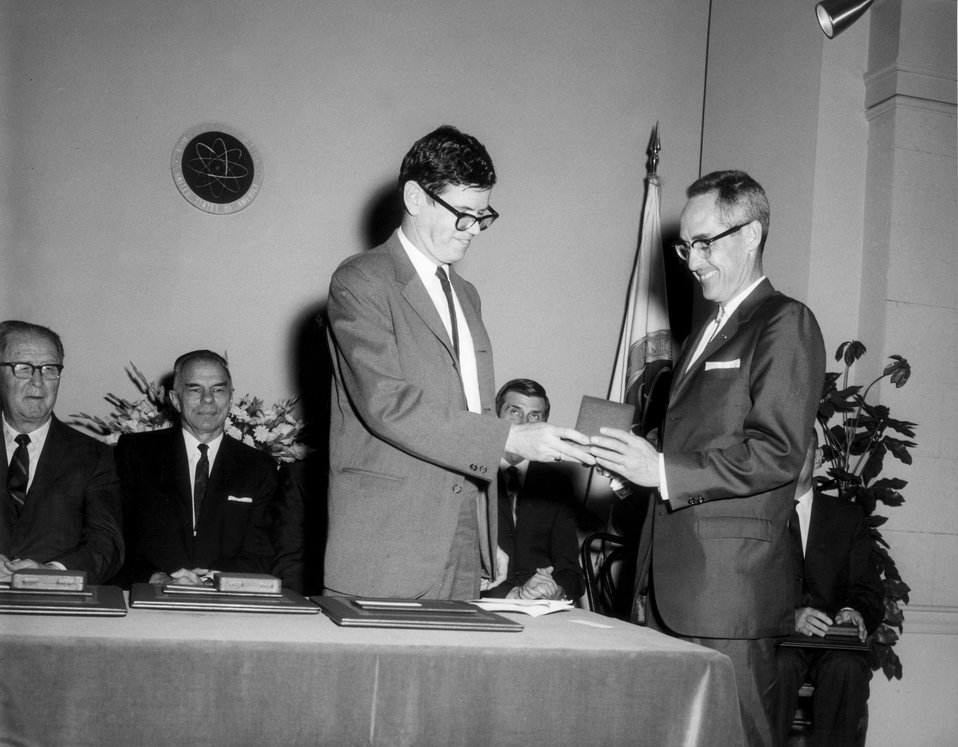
7th E.O. Lawrence Award Ceremony, April 27, 1966, Wash., D.C. L-R: Senator Anderson, Chairman Seaborg, Commissioner Palfrey, Dr. Huizenga, Dr. Anderson.